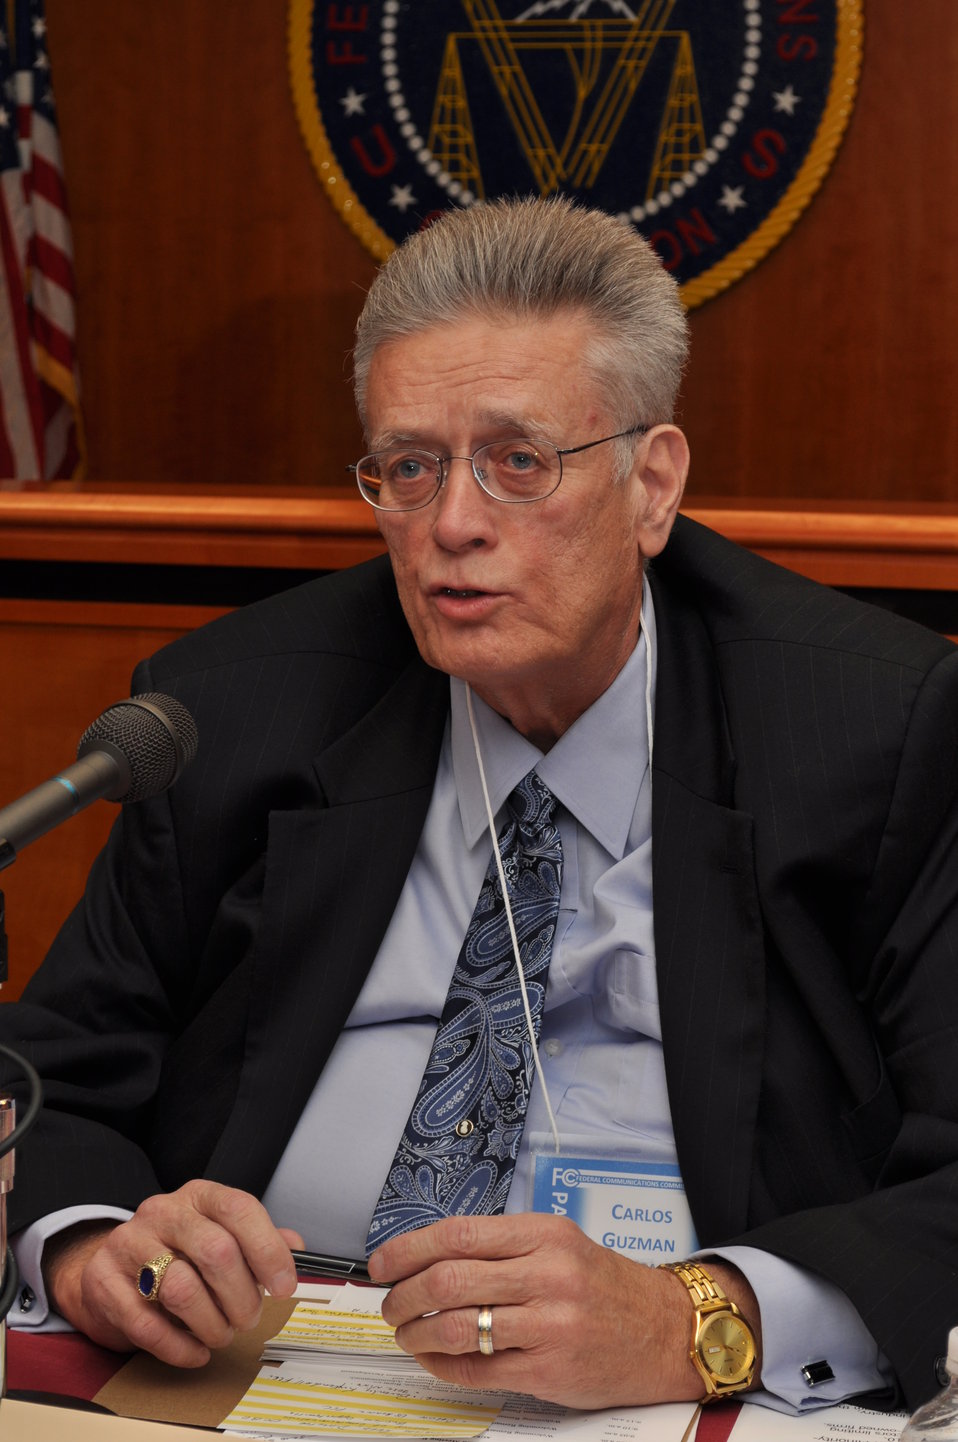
Capitalization Strategies

Workshop for small, minority and women owned businesses. Hosted by the Office of Communications Business Opportunities